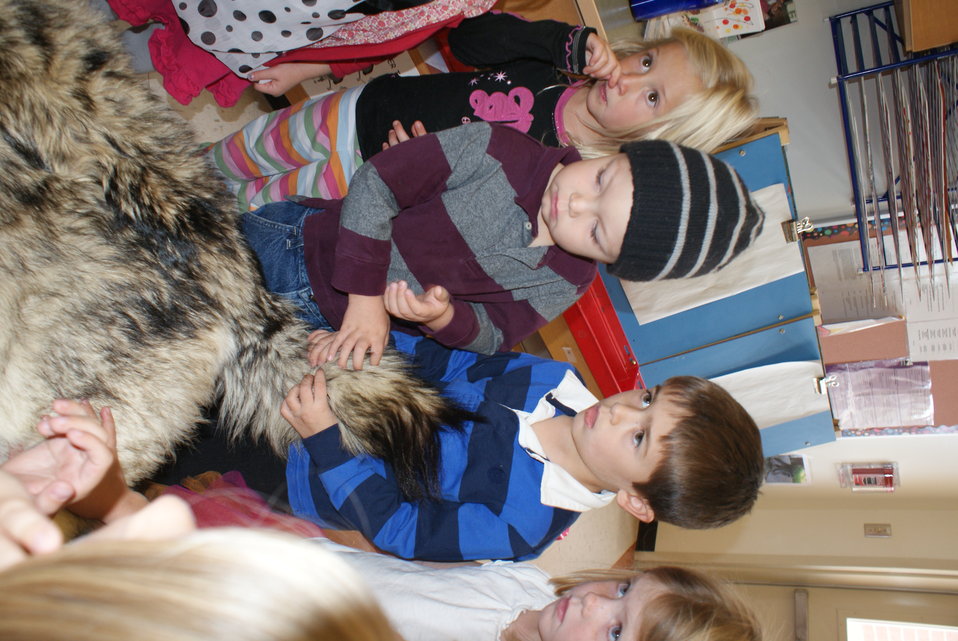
Scientists in the Community Program

U.S. Fish and Wildlife Service Mountain-Prairie Region Deputy ARD for External Affairs, Matt Kales, introduces early childhood education students at William Roberts Elementary School in Denver to some of Colorado's native and historic wildlife species.